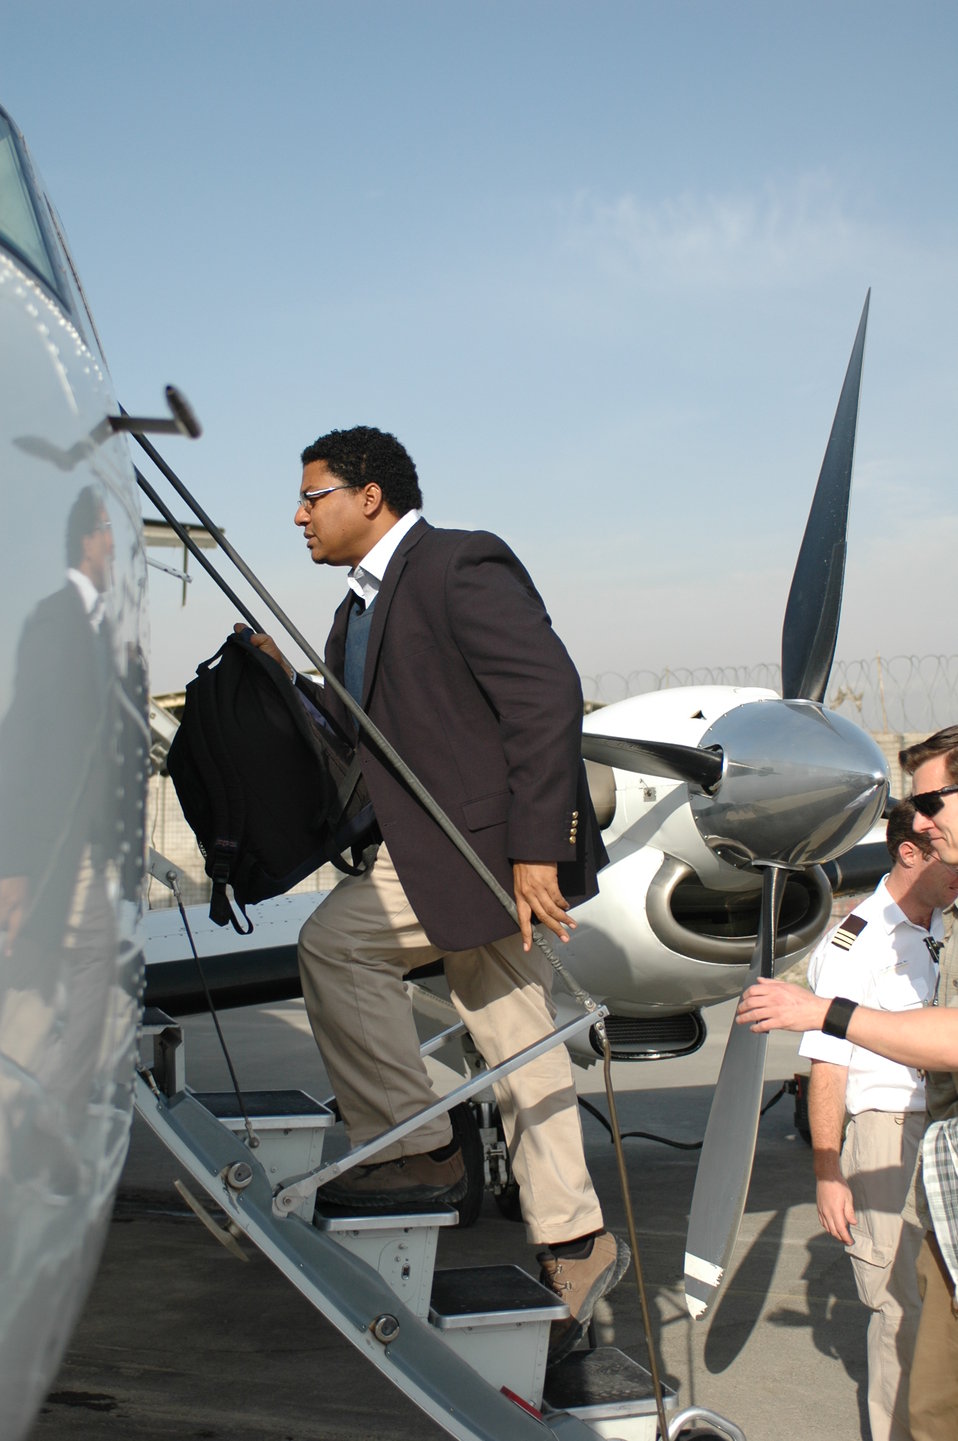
Dr Shah Visits Kandahar April 9, 2010